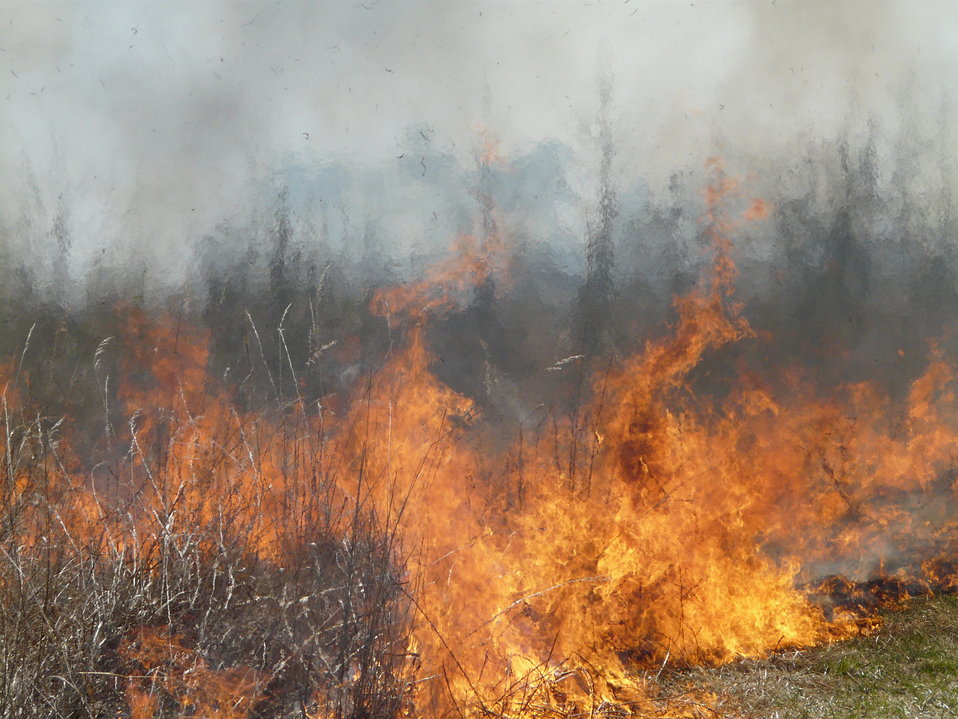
Fire Consumes Brush

Laurel, Maryland, April 14, 2012: A presribed fire burns woody vegetation encroaching on a field. The controlled burn, at Patuxent Research Refuge, was to maintain native grasslands, remove woody vegetation, and control invasive species such as Korean Lespedeza.
The burn, at Patuxent Research Refuge, was to maintain native grasslands, remove woody vegetation, and control invasive species such as Korean Lespedeza.